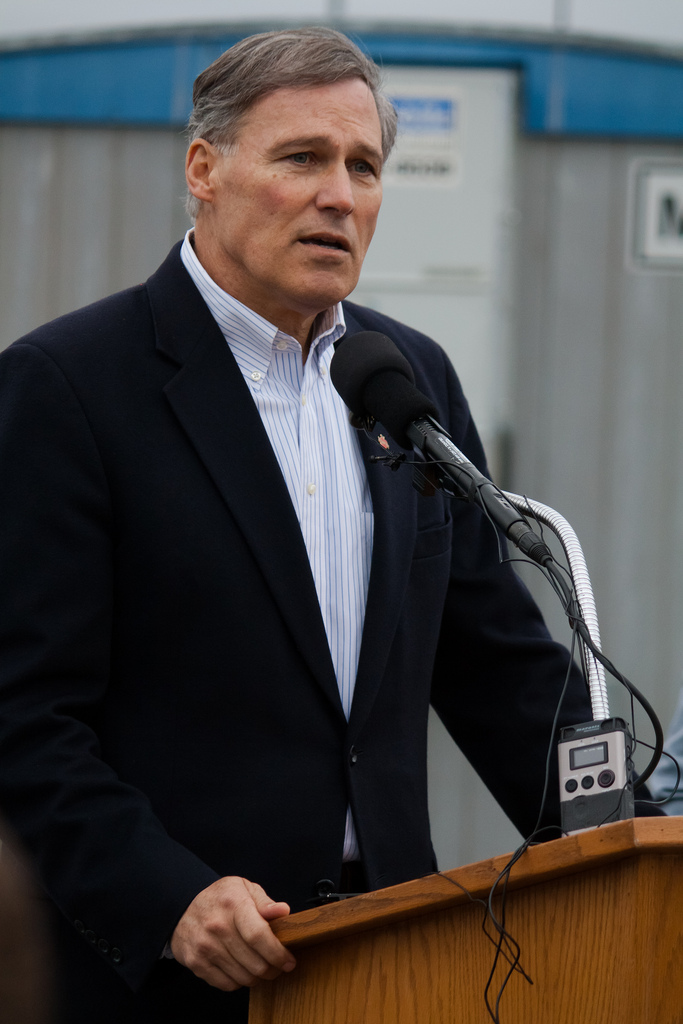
Inslee Visit at Hanford

Washington State Governor Jay Inslee, accompanied by Senior Advisor for Environmental Management Dave Huizenga, visits Hanford Tank Farms and Waste Treatment Plant